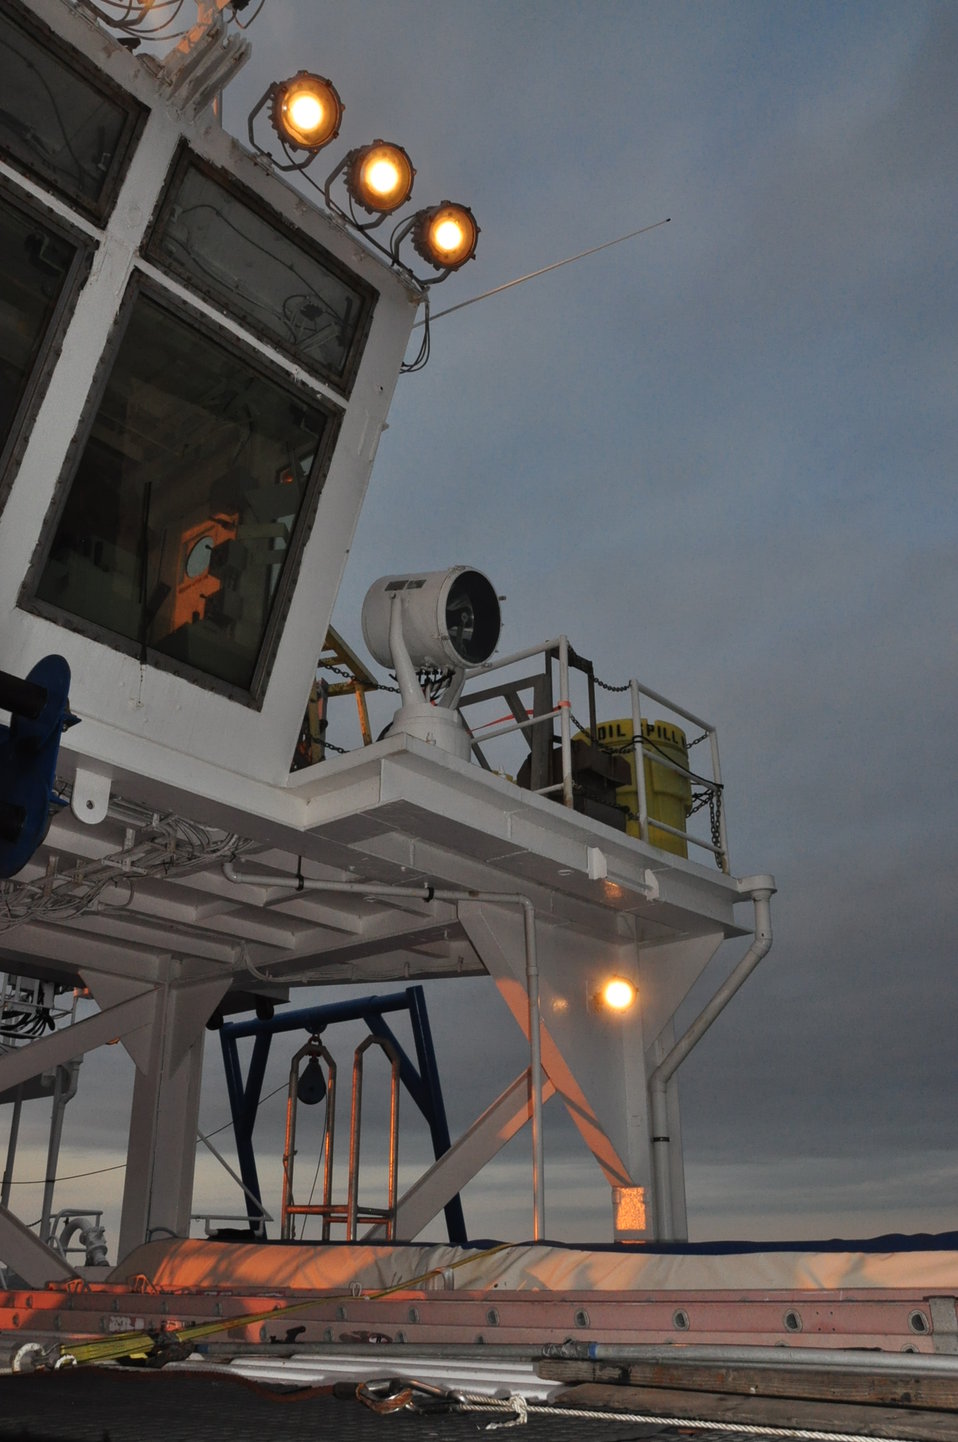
August 5, 2011 View from the stern deck